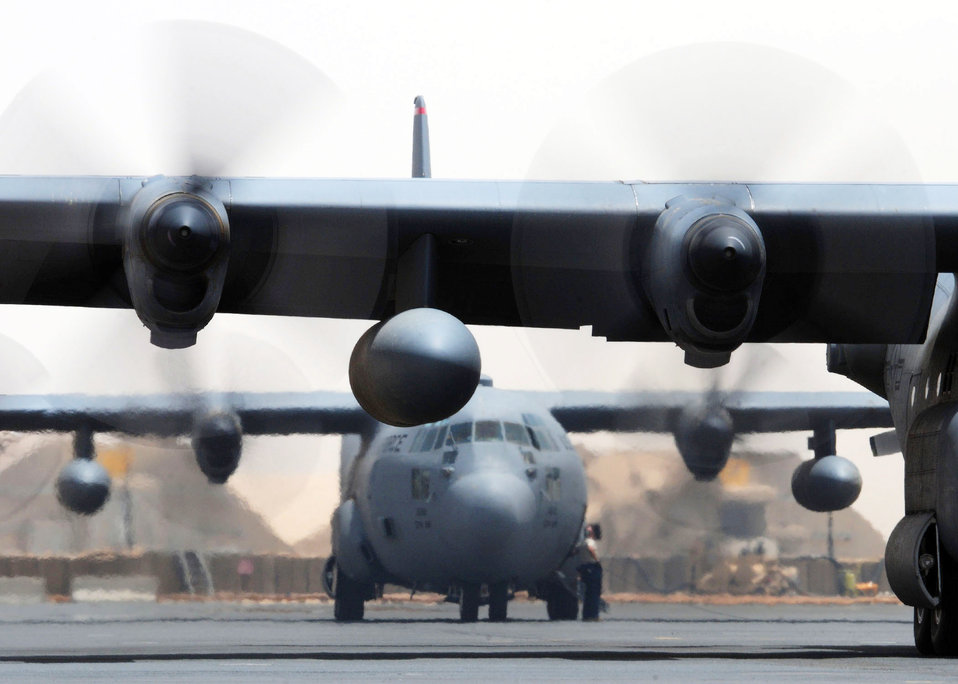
Ready for the mission

Two C-130 Hercules run engines on the parking ramp before mission departure Aug. 12 at an air base in Southwest Asia. The aircraft are deployed from the 374th Airlift Wing at Yokota Air Base, Japan.